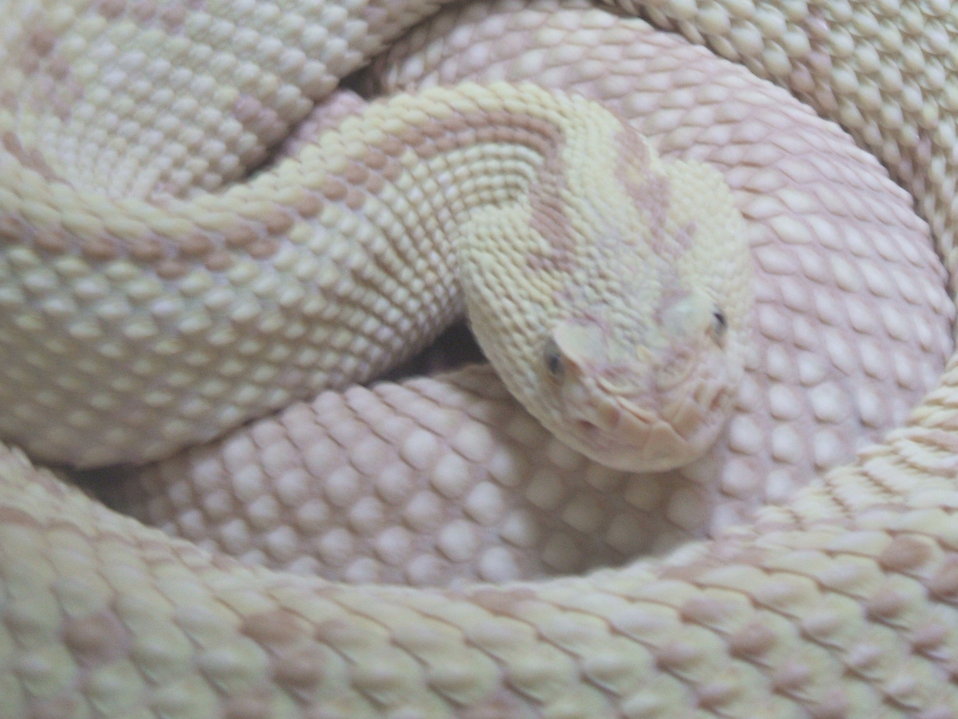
Wicked awesome snake.